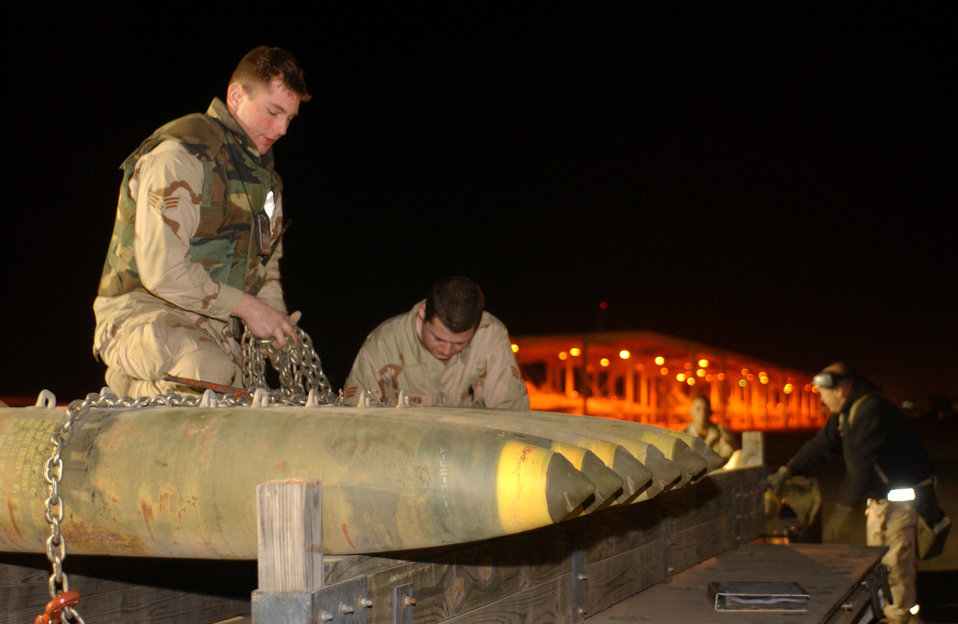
Loose the chains

OPERATION IRAQI FREEDOM -- Munitions specialists with the 332nd Air Expeditionary Wing remove the tie-down chains from bombs that will be loaded onto fighter aircraft for use in support of Operation Iraqi Freedom.